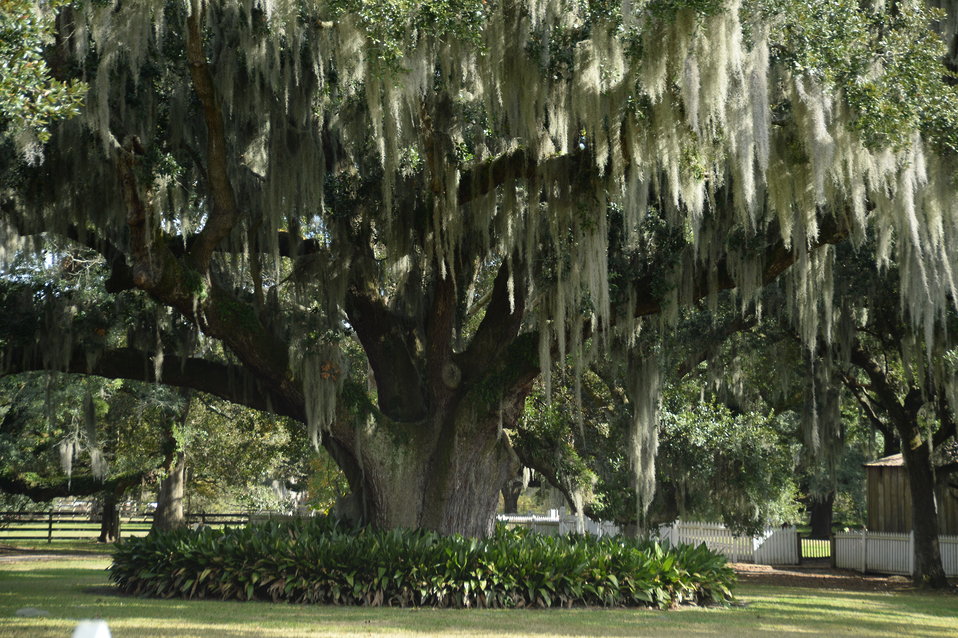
There are many scenic views surrounding New Orleans, LA on Tuesday, Nov. 19, 2013.